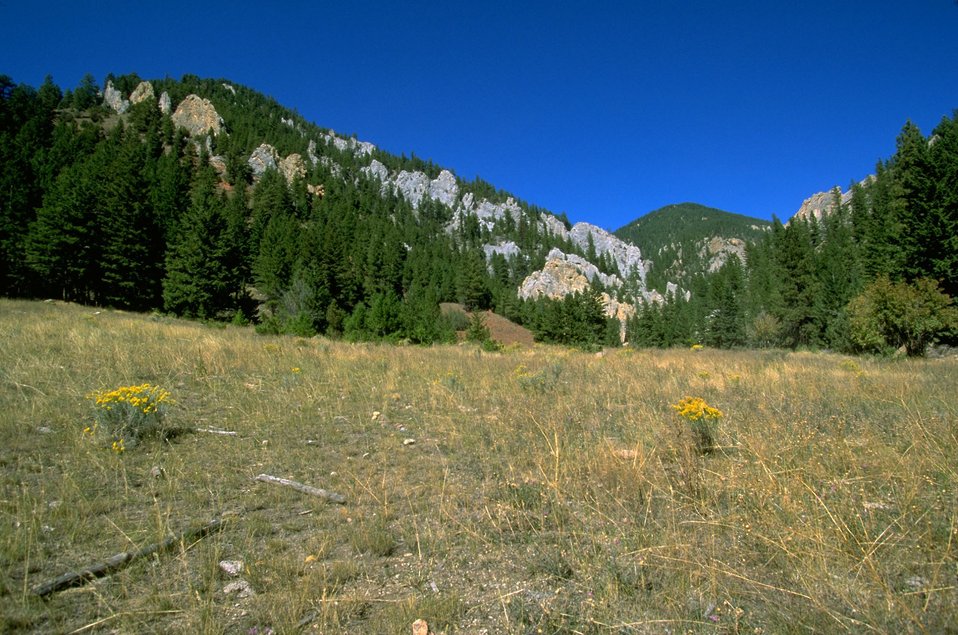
Rattler Gulch-Limestone Cliffs ACEC (area of critical environmental concern)